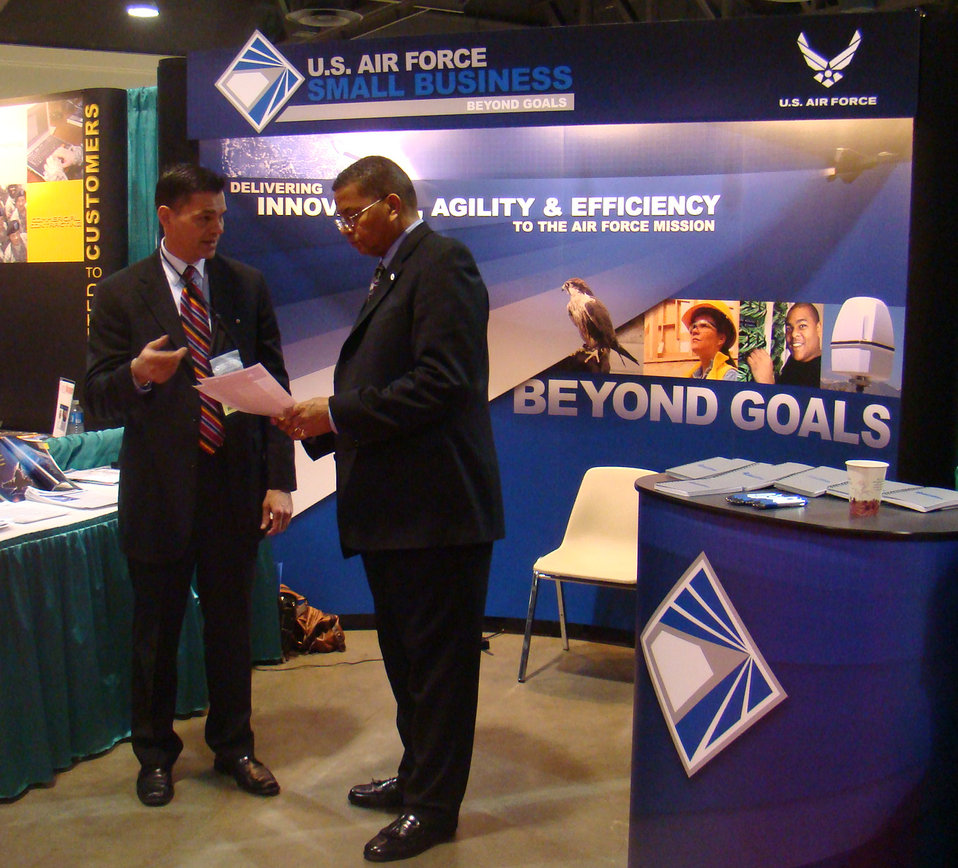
Small Business officials talk innovation

Tim Douglas of the Air Force Office of Small Business Programs (left) speaks with Frank Anderson, president of Defense Acquisition University, at the Air Force Small Business exhibit during the National Contracting Management Association World Congress in Long Beach, Calif., April 5 to 8.